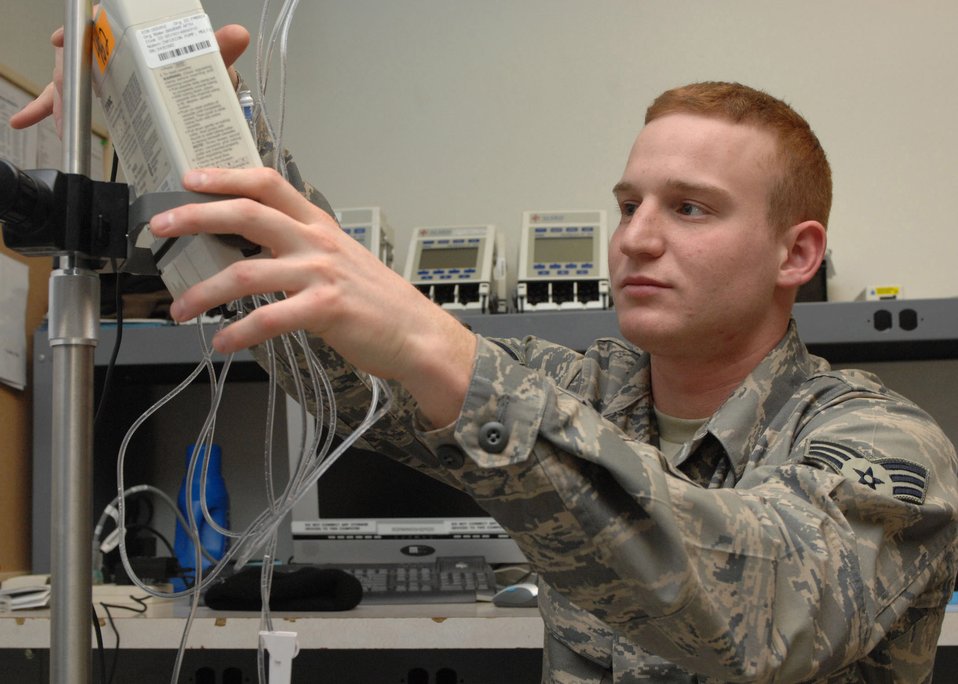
Bagram medical members important part of team

Senior Airman Michael Luc verifies the accuracy of an infusion pump used for patient medication Feb. 5 at the Craig Joint Theater Hospital at Bagram Air Base, Afghanistan. Airman Luc is a biomedical equipment technician deployed from the 60th Medical Support Squadron at Travis Air Force Base, Calif. The Bagram AB hospital is named for heroic Army medic Staff Sgt. Heathe Craig, who died while trying to save a patient in 2006. As the two were being hoisted from a ridgeline by a Blackhawk helicopter the line to the chopper snapped. Sergeant Craig and his patient fell to their deaths.